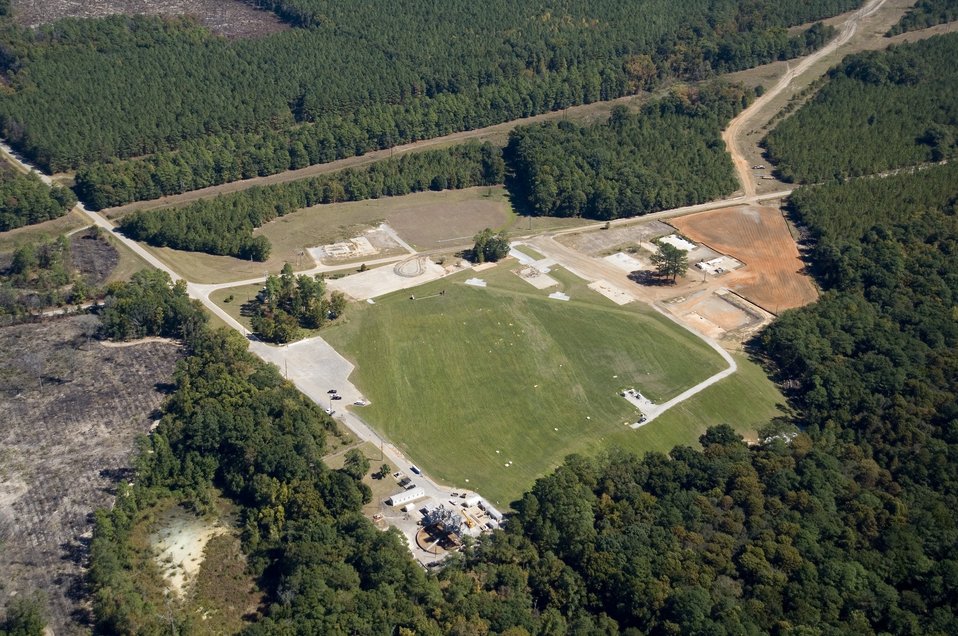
SRS T Area in November 2006 (after)